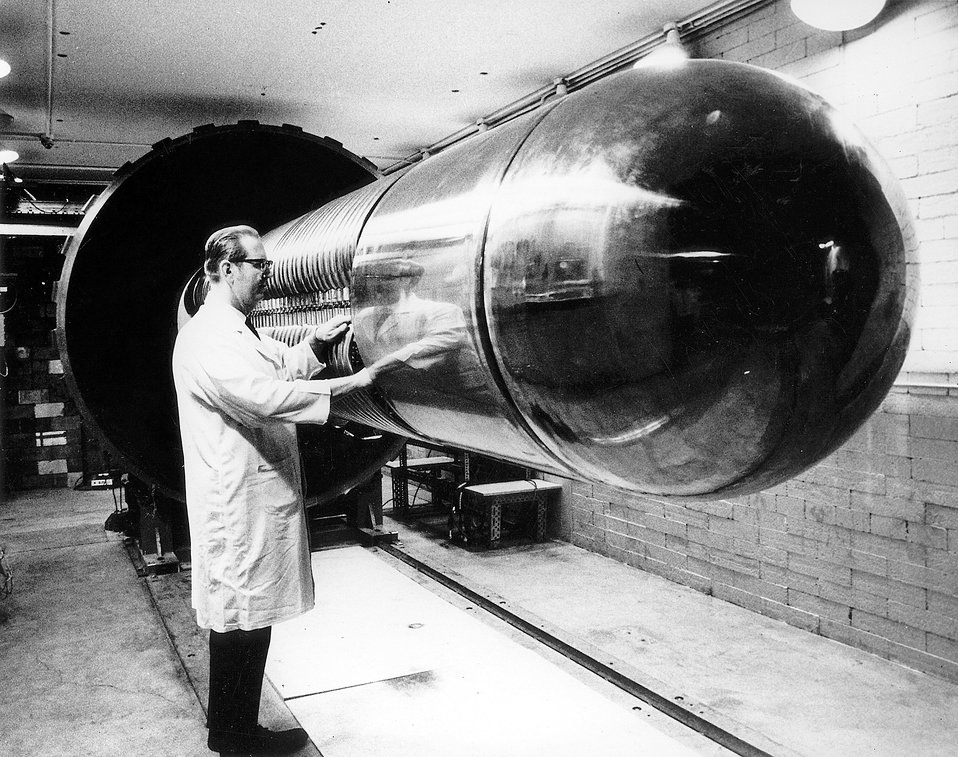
A new Dynamitron installed in the Physics Division of Argonne provides an intense source of fast neutrons for experiments on neutron-induced nuclear reactions.
c.1970